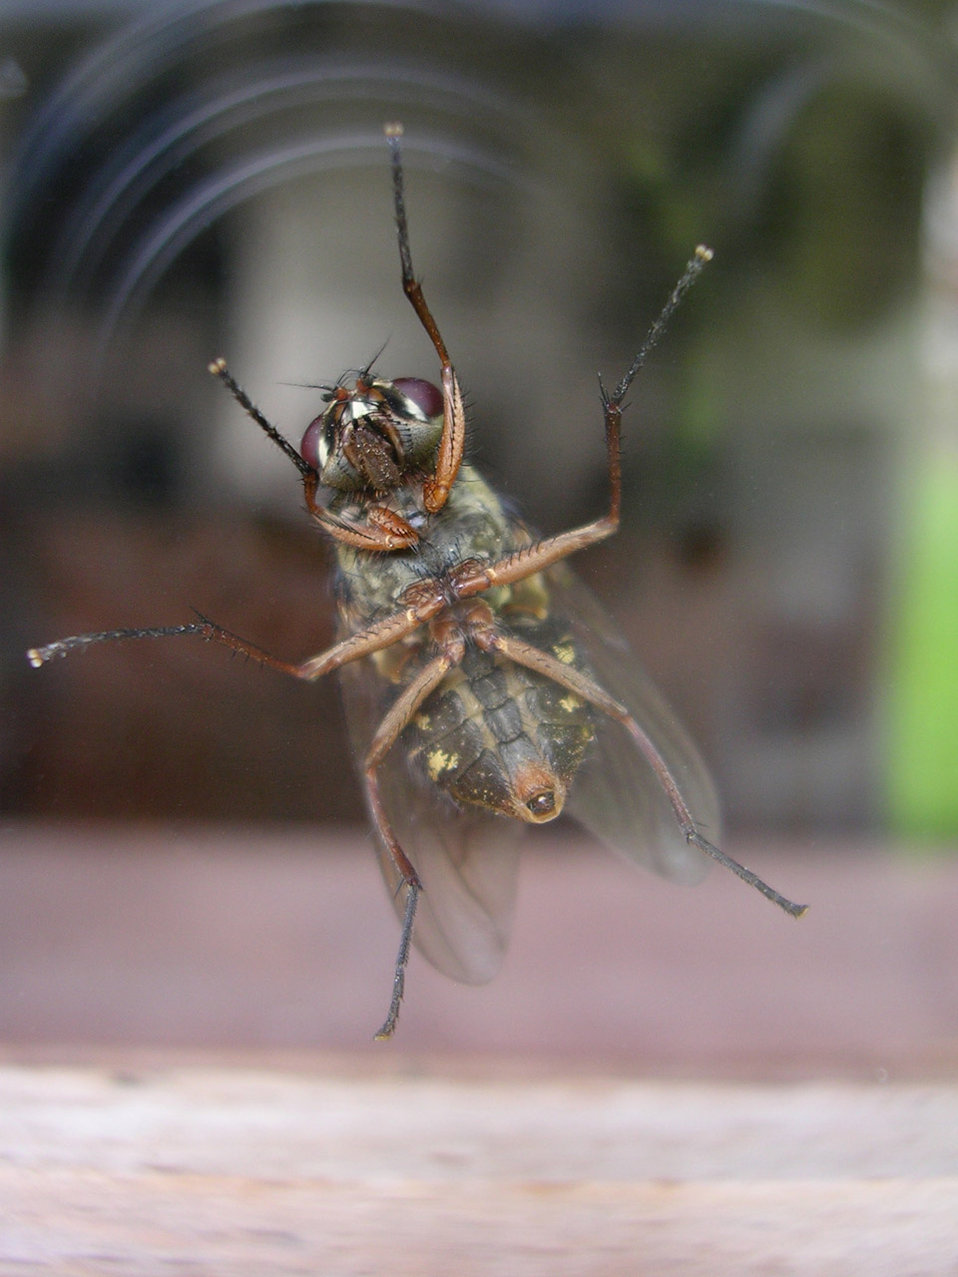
Fly on the window

Joa a. .. is a fly. it is on window..